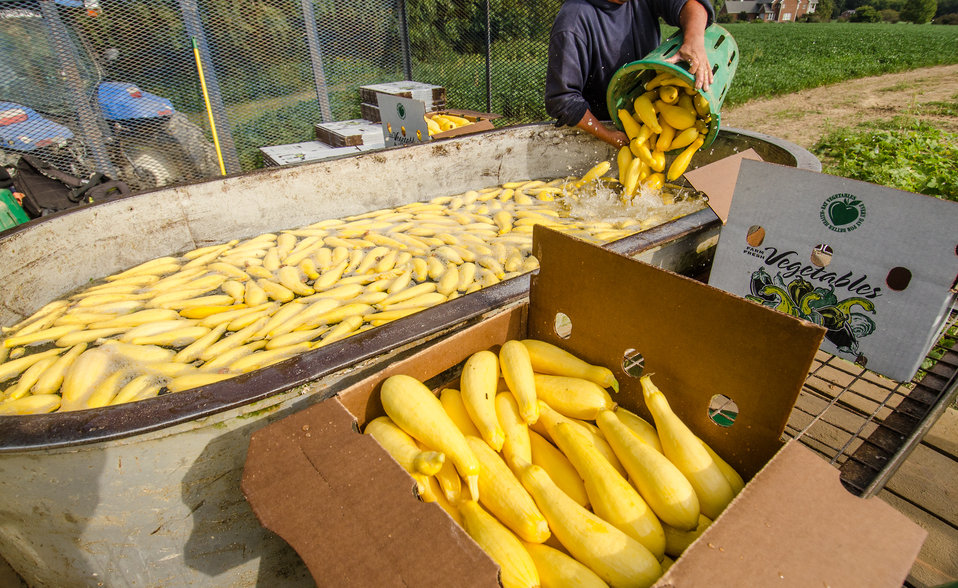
Migrant workers rinse and pack just-picked yellow squash on a processing trailer at Kirby Farms in Mechanicsville, VA on Sep. 20, 2013. Kirby Farms is a third-generation family farm that covers 500 acres, and generates produce and grains on a year-around operation.